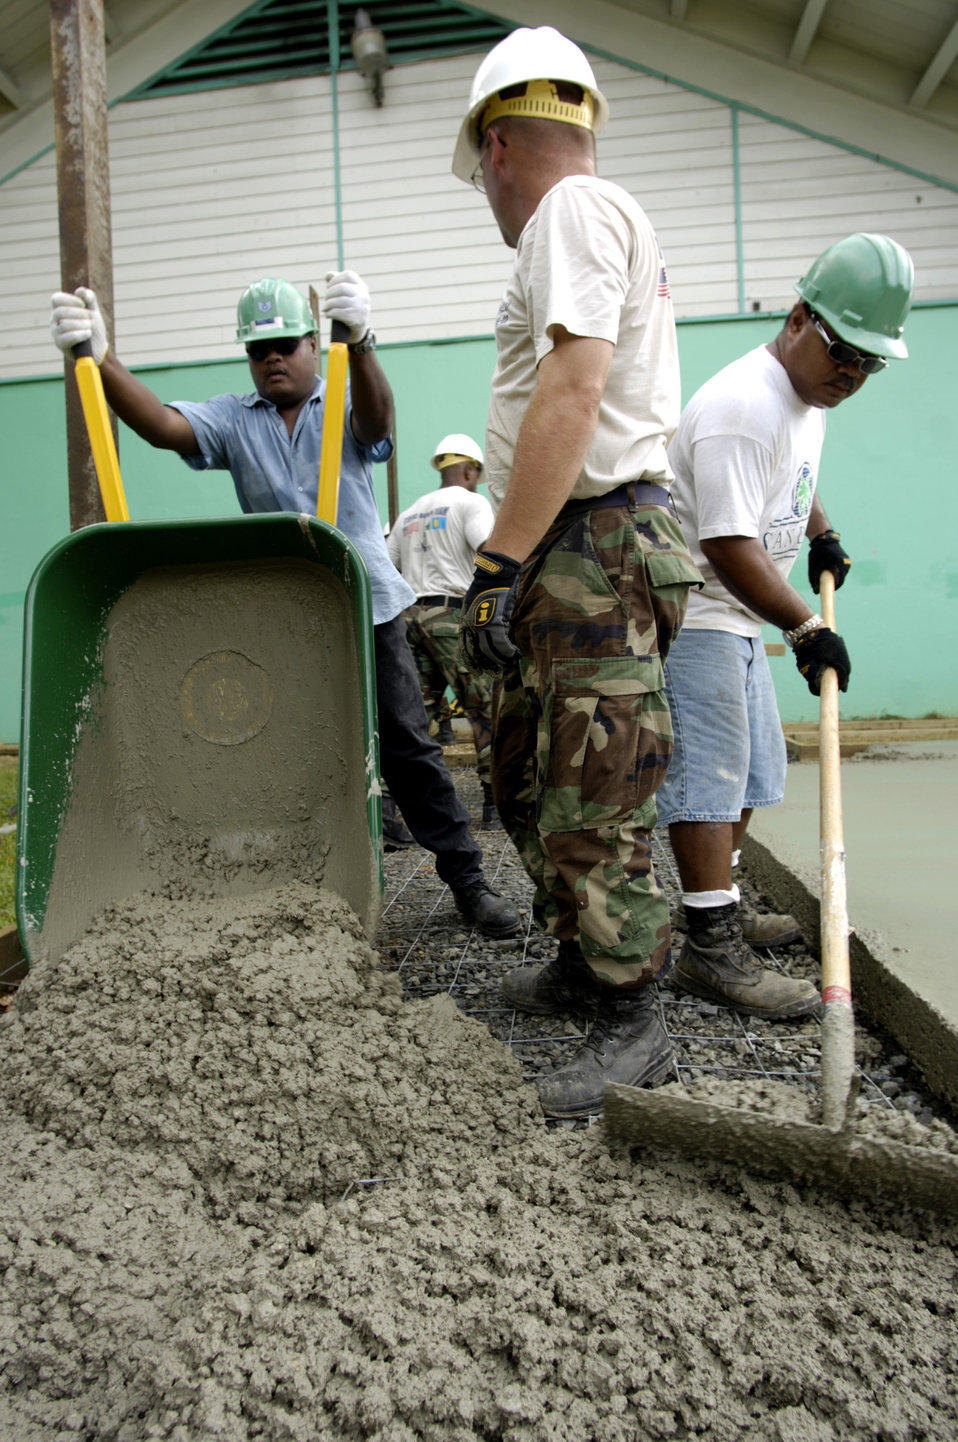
CAT apprentice program

BABLEDAOB, Palau (AFPN) -- Equipment operator Tech. Sgt. Michael Gandy shows Palauan apprentices how to properly pour concrete for a pavilion on the Palau Community College campus. Sergeant Gandy is part of the Air Force civic action team here. The team's mission is twofold: help develop Palau's basic infrastructure development and provide a favorable U.S. military presence. The team does this through community construction, apprentice training, medical civic action program and community relations.